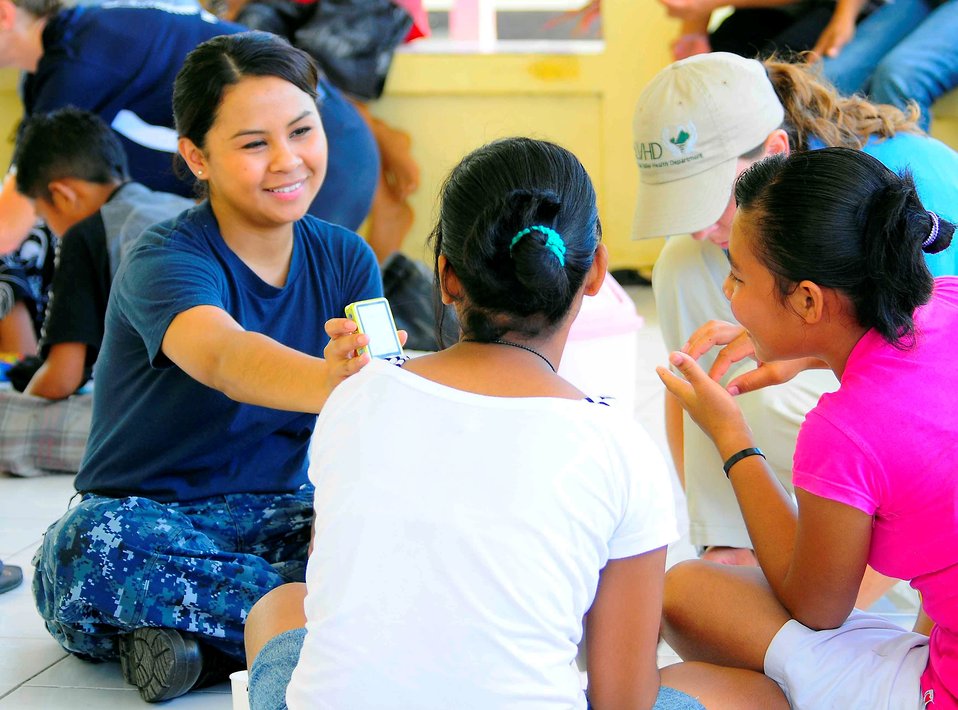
Yeoman 3rd Class Adrina Vasquez Shows Two Indonesian Girls a Photo

Yeoman 3rd Class Adrina Vasquez, currently embarked aboard the Military Sealift Command hospital ship USNS Mercy (T-AH 19), shows two girls a photo of themselves during a community service event at the Rumah Sejahtera Bagi Anak Orphanage, in support of Pacific Partnership 2010 in Tobelo, Indonesia, on July 14, 2010. Pacific Partnership 2010 is the fifth in a series of annual U.S. Pacific Fleet endeavors conducted in Indonesia as a disaster relief exercise to strengthen regional partnerships.